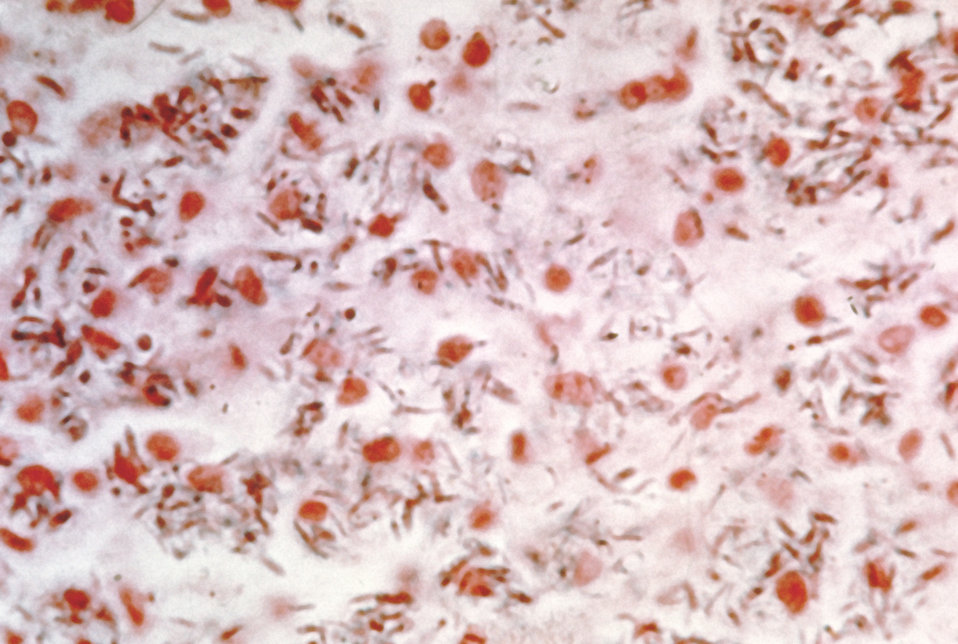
This photomicrograph shows the presence of Sporothrix schenckii in a smear obtained from a rat.